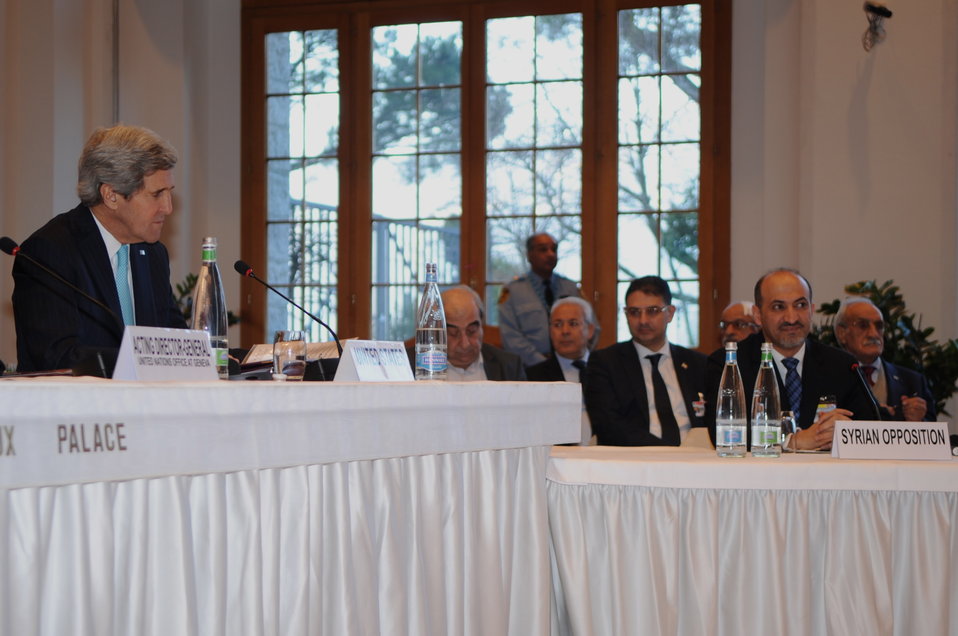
Secretary Kerry Sits Besides Syrian Opposition Coalition President Jarba at Geneva II Conference

U.S. Secretary of State John Kerry sits beside Syrian Opposition Coalition President Ahmed al-Jarba at the start of the Geneva II conference in Montreux, Switzerland, on January 22, 2014.